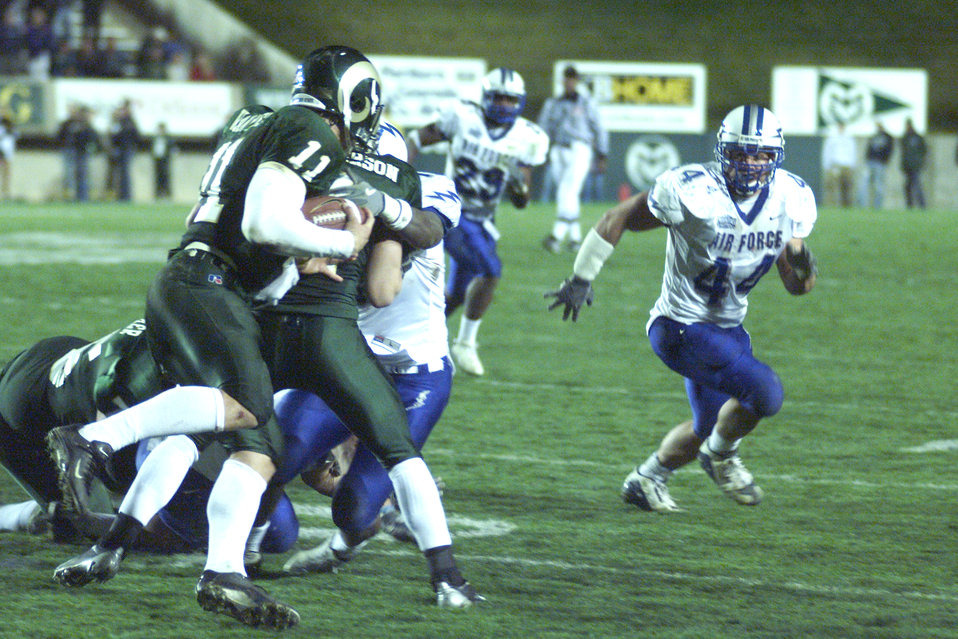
CSU grounds Falcons

FORT COLLINS, Colo. -- Colorado State University quarterback Bradlee Van Pelt (11) and Air Force Academy inside linebacker Trevor Hightower head for a mid-field showdown, during the CSU-Air Force football game, Oct. 16. CSU won 30-20. The Rams advance to 5-3 with the win, while the Falcons fall to 6-2.